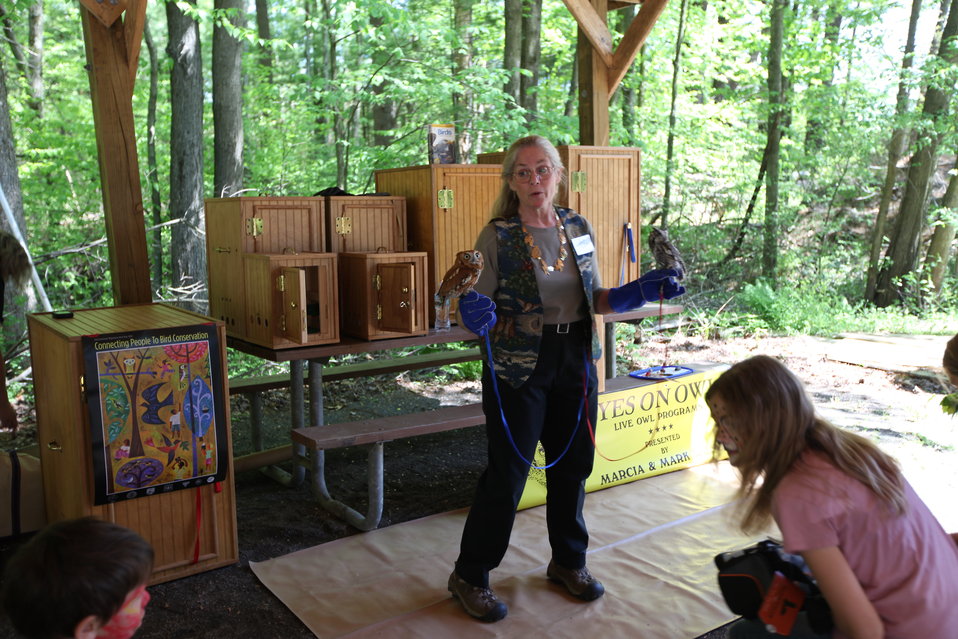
Youth Fishing Day 2012

Megan Nagel/USFWS